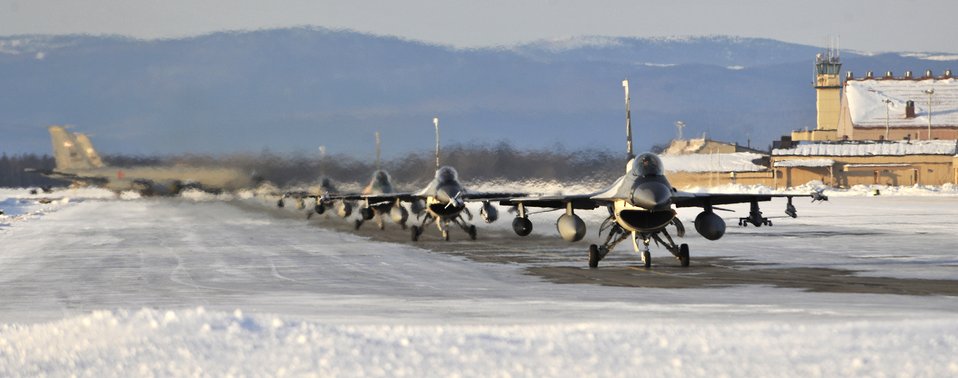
F-16 Fighting Falcons taxi on the flightline at Eielson Air Force Base, Alaska, March 1, 2011, after returning from Anderson AFB, Guam. They were there to participate in a two-week exercise conducted by U.S. and Japanese officials.